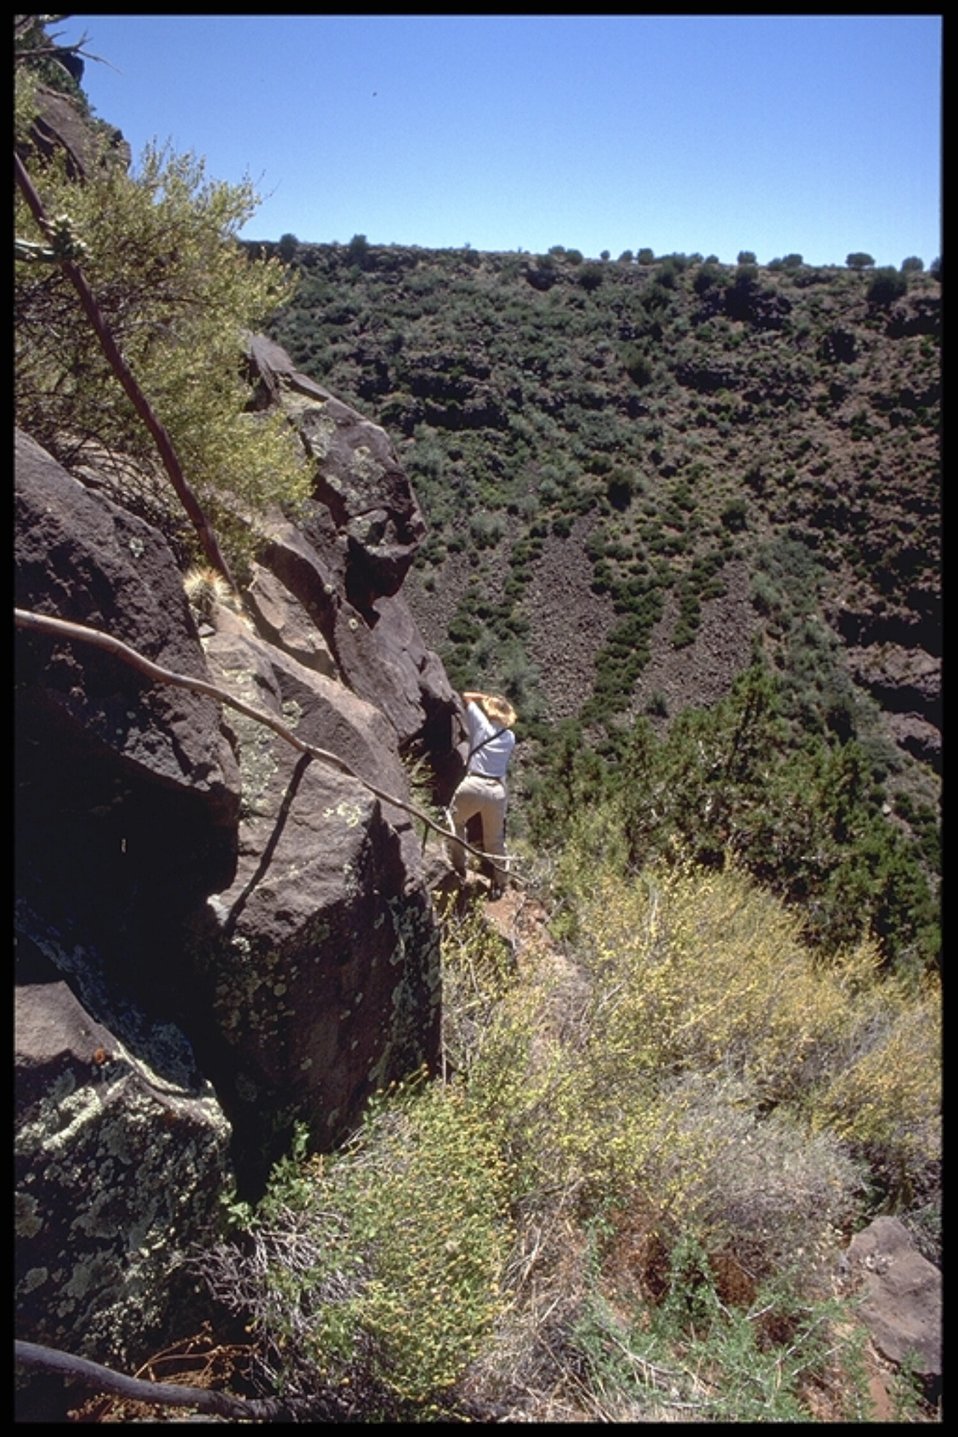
The Agua Fria National Monument is only 40 miles outside of Phoenix. It can be accessed by taking Interstate 17 to Badger Springs or Bloody Basin Road. There are great photo opportunities and interesting places to explore.